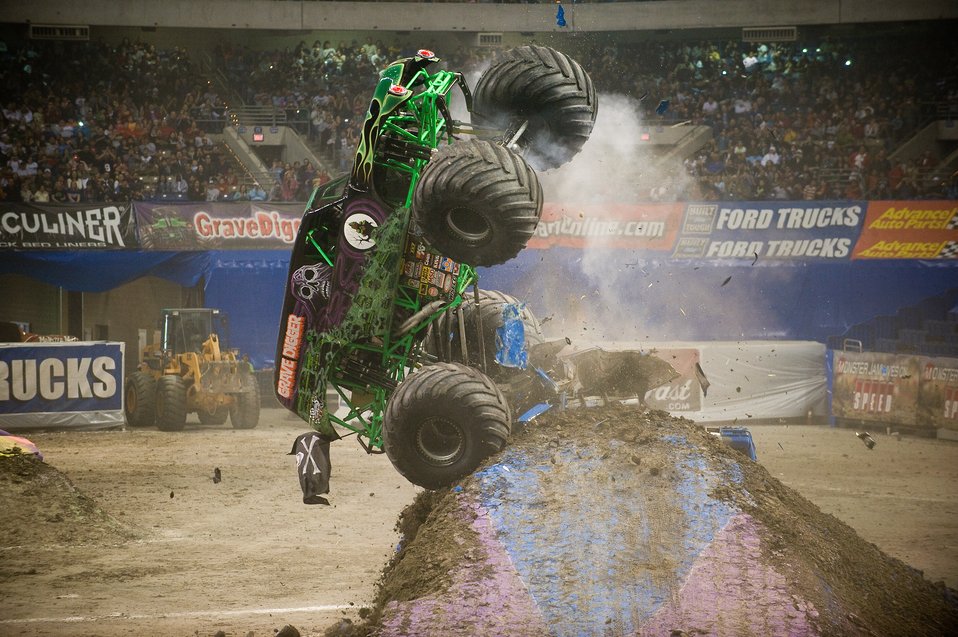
AF flies high at Monster Jam

Grave Digger's greatest and last act before flipping over during the freestyle competition at the 2009 Monster Jam at the Alamodome in San Antonio on Jan 11. Most of the trucks were driven to the breaking point as they jumped off, bounced on, and drove over the obstacles made of dirt mounds, busses and crushed cars. Approximately 45,000 people attend the event. These monster trucks have big block supercharged racing V-8 engine that churn out more than 1,400 horsepower. They weigh approximately 10,000 lbs and are equipped with four-wheel steering. The wheels and tires are 66